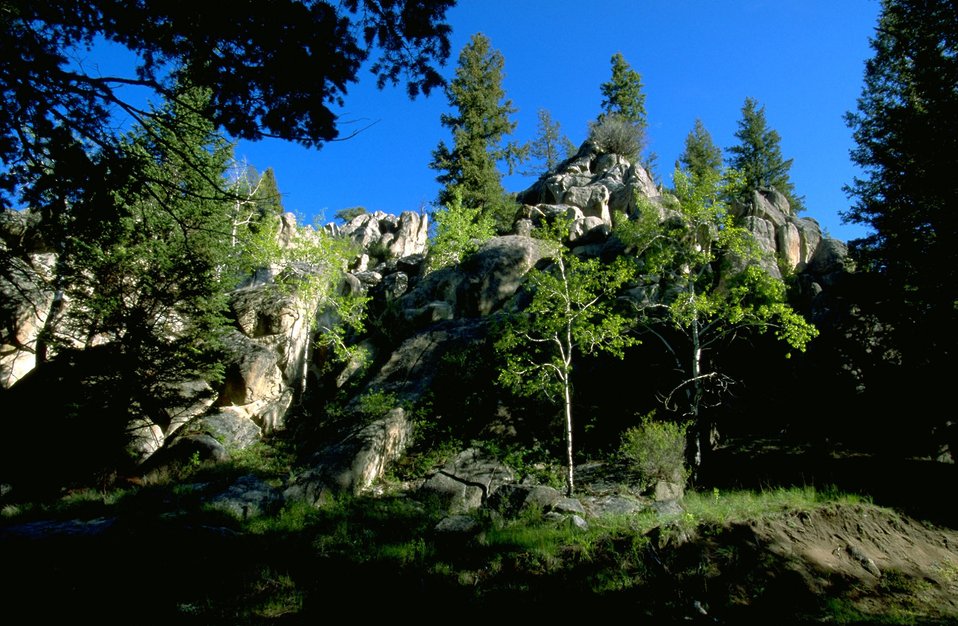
Rock Formations and Aspen